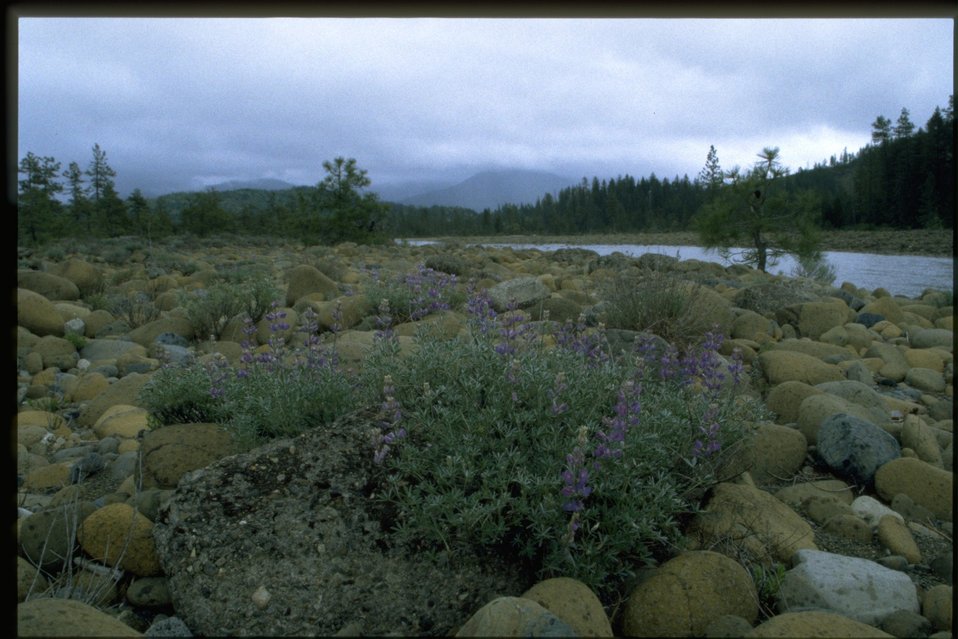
View of river from Rough & Ready.